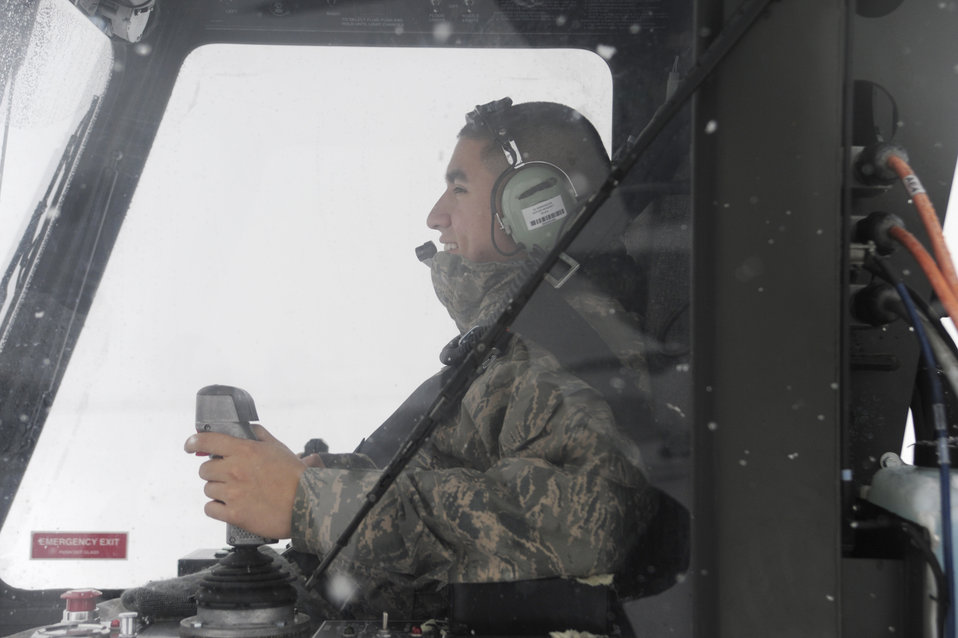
Snow sorties

Airman 1st Class A. Garcia awaits instruction to deice a C-17 Globemaster III before a mission Nov. 22, 2010, at Joint Base Lewis-McChord, Wash. Airman Garcia is an electrician assigned to the 62nd Aircraft Maintenance Squadron.